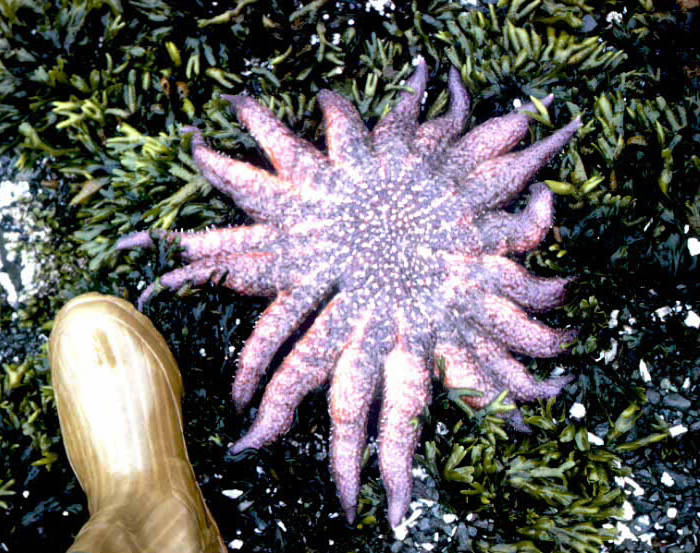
Sunflower starfish

Alaska Maritime National Wildlife Refuge